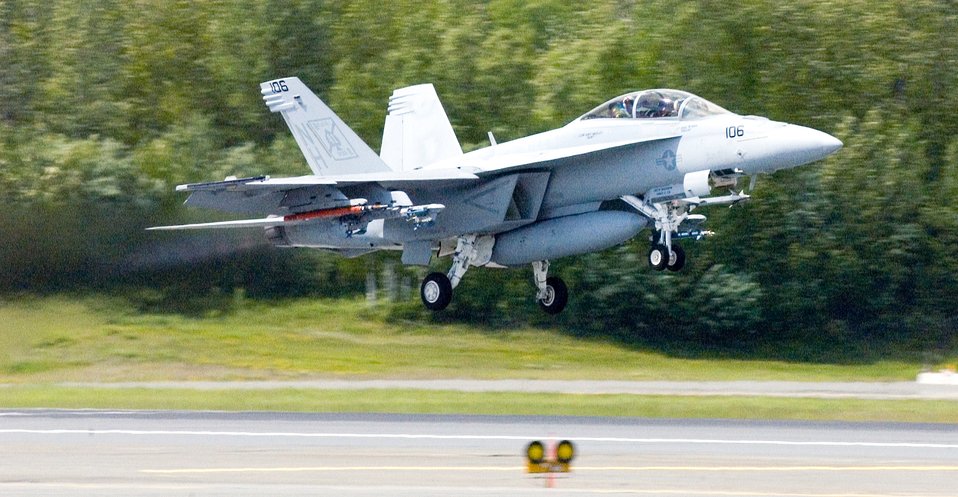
Northern Edge aims for air, sea dominance

An F/A-18F Super Hornet assigned to the